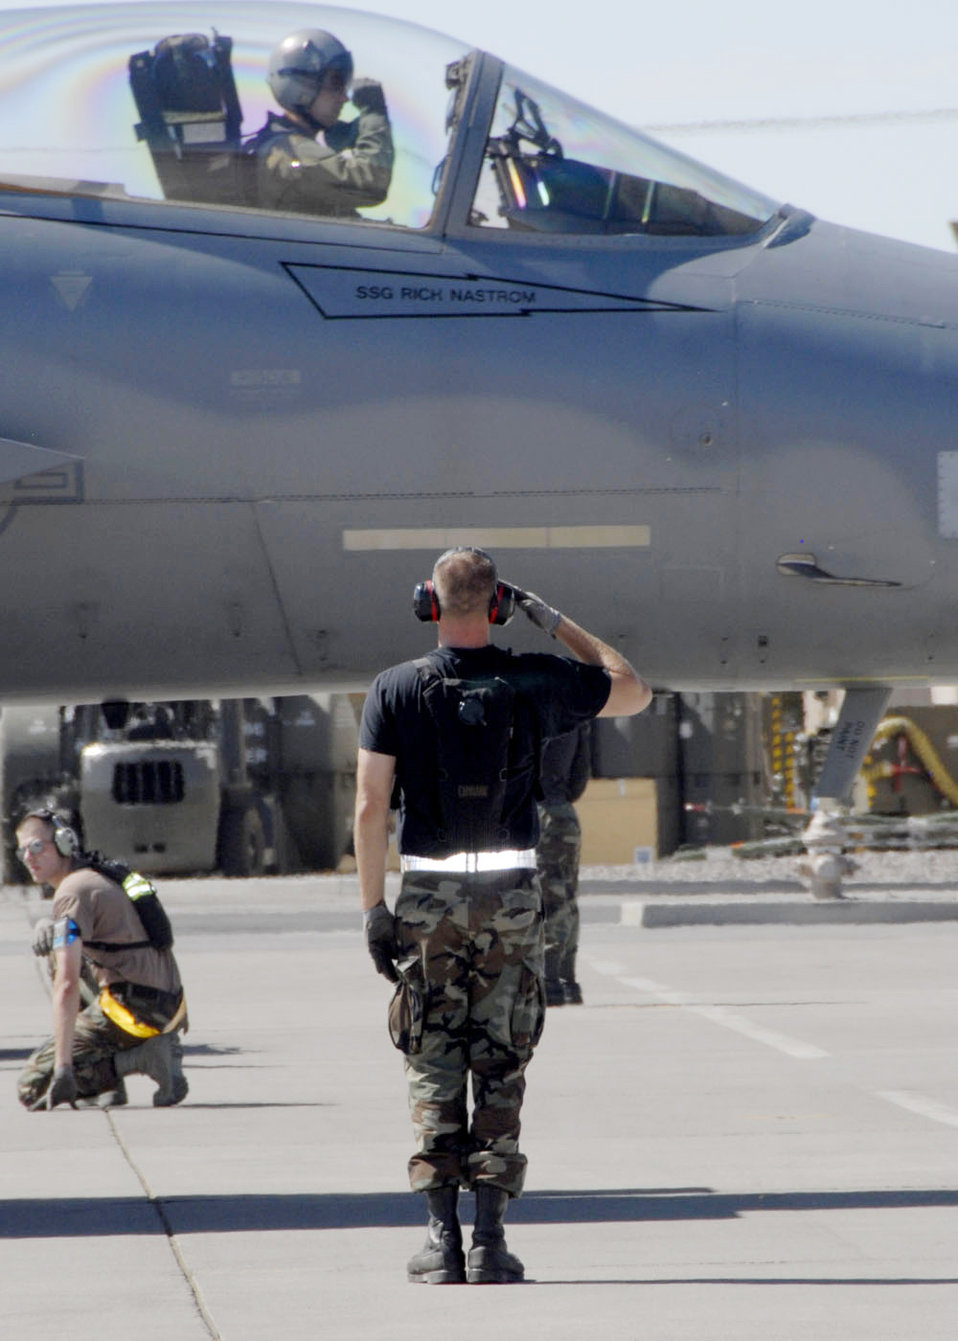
Off you go...

An F-15 Eagle crew chief salutes as the aircraft taxis past on the flightline of Nellis Air Force Base, Nev., Aug. 25 on the way to a Red Flag training mission. Red Flag offers training in actual wartime scenarios to increase combat skills. The aircraft and crew chief are with the Massachusetts Air National Guard's 104th Fighter Wing at Barnes Air National Guard Base in Westfield, Mass.